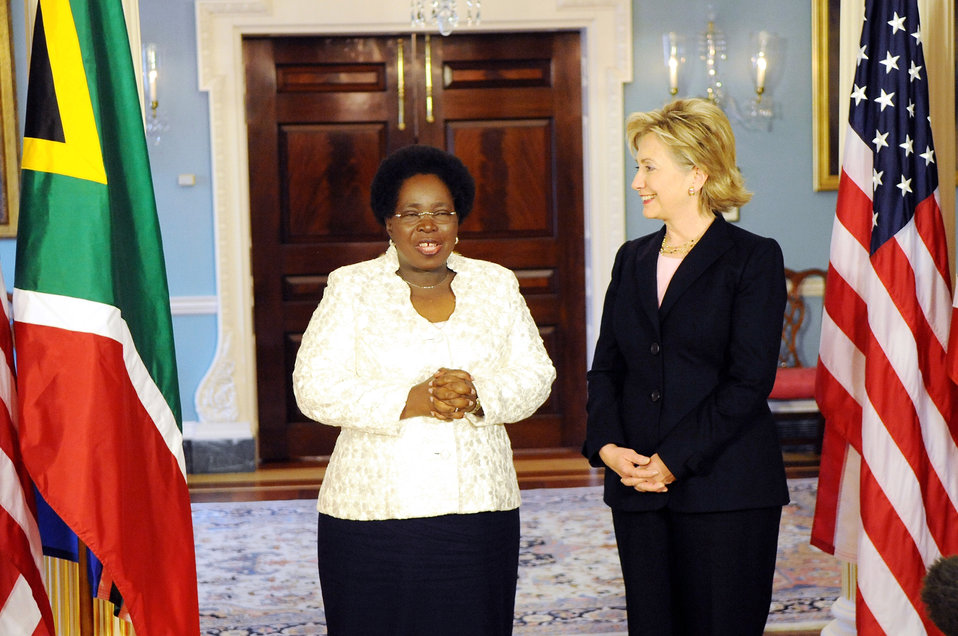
Secretary Clinton Meeting With South African Minister of Foreign Affairs

U.S. Secretary of State Hillary Rodham Clinton during bilateral meeting with South African Minister of Foreign Affairs H.E. Nkosazana Dlamini-Zuma of the Republilc of South Africa in Washington, DC March 19, 2009.